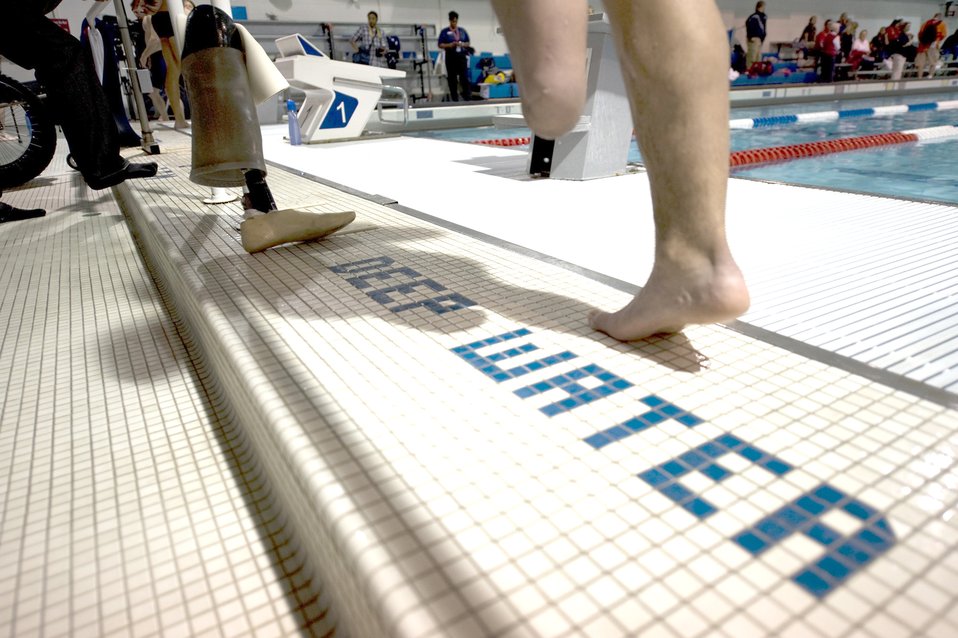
Warrior Games swim practice

Second Lt. Ryan McGuire walks to the diving block during swim practice May 11, 2010, at the Olympic Training Center in Colorado Springs, Colo. Lieutenant McGuire is assigned to Laughlin Air Force Base, Texas.